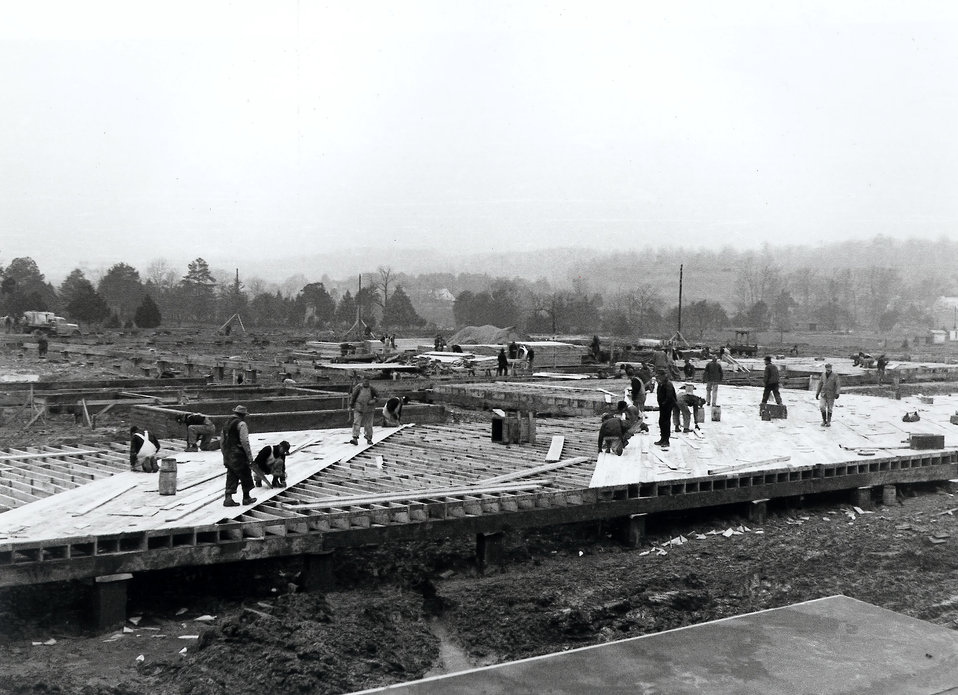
MED adm. Bldg. flooring and foundation Oak Ridge

2-22 DOE photo by Ed Westcott 2-18-42